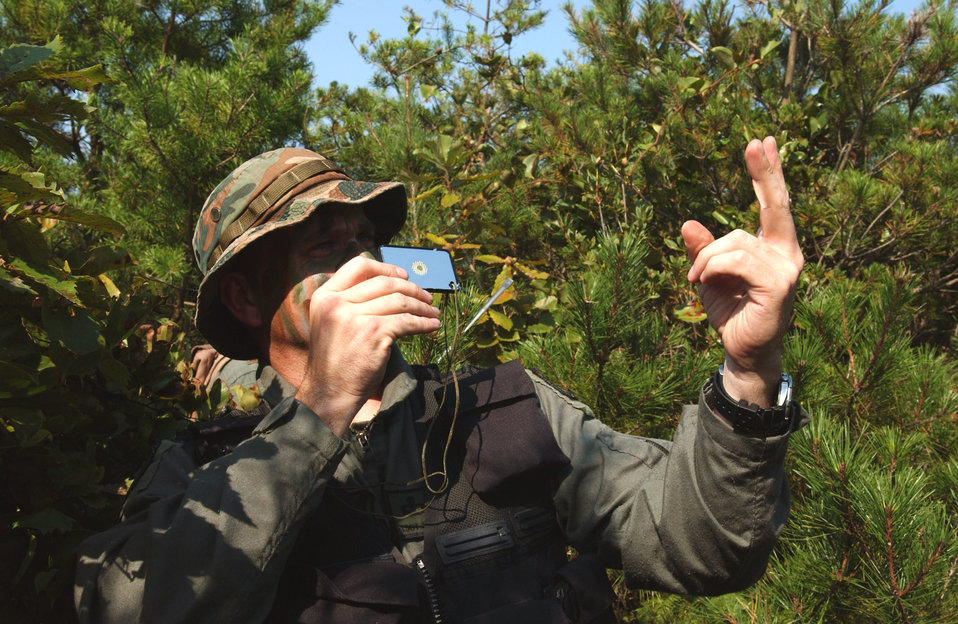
Life-saving training at Osan AB

Tech. Sgt. Steven Filby gets the attention of four A-10 Thunderbolt II pilots by using a mirror during combat search and rescue training Sept. 21 near Osan Air Base, South Korea. Annual training is conducted by survival, evasion, resistance and escape instructors to reacquaint aircrew members with combat search and rescue procedures and techniques. Sergeant Filby is with the 51st Operational Support Squadron at Osan AB.